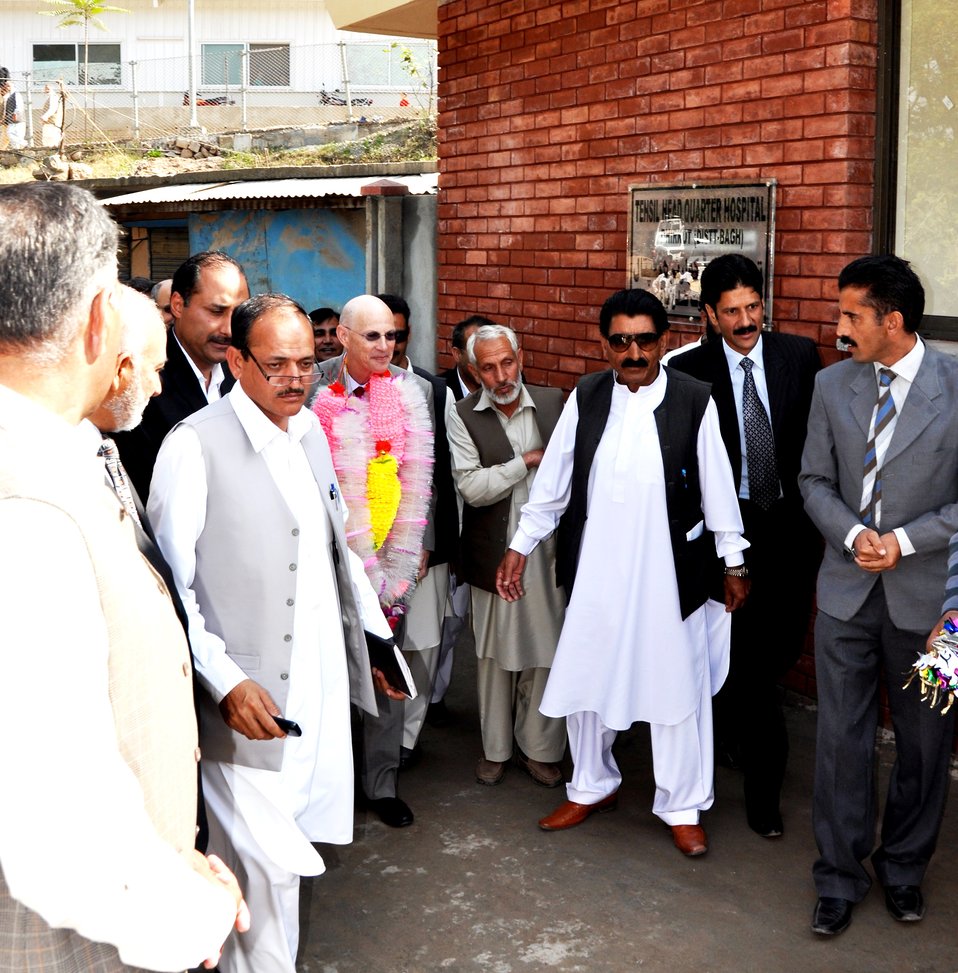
Bagh 01